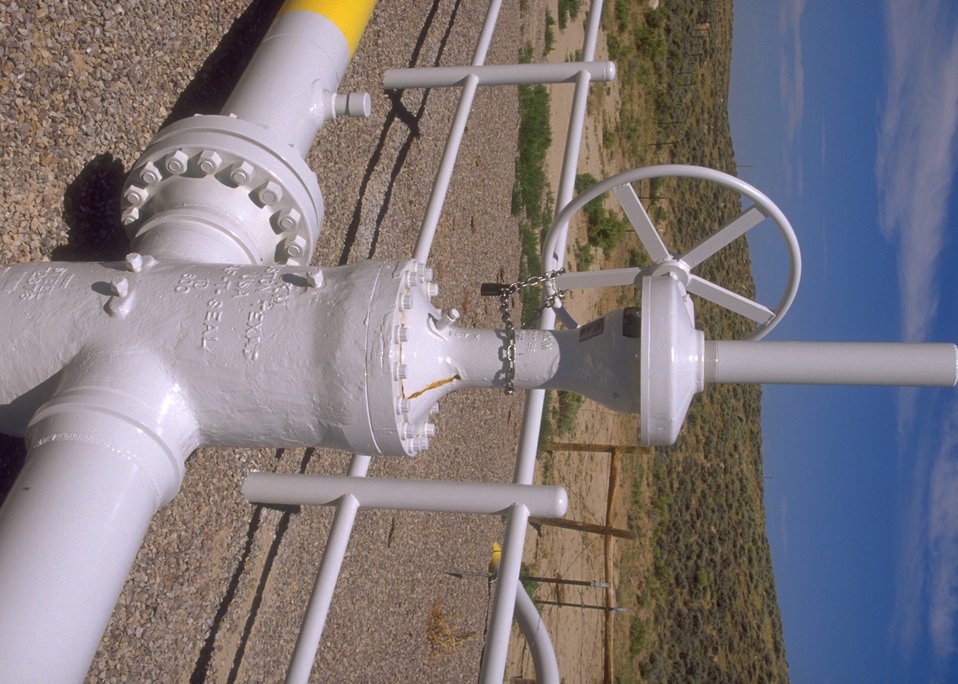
Natural gas pipeline along the Oregon Trail west of Casper, Casper Field Office.